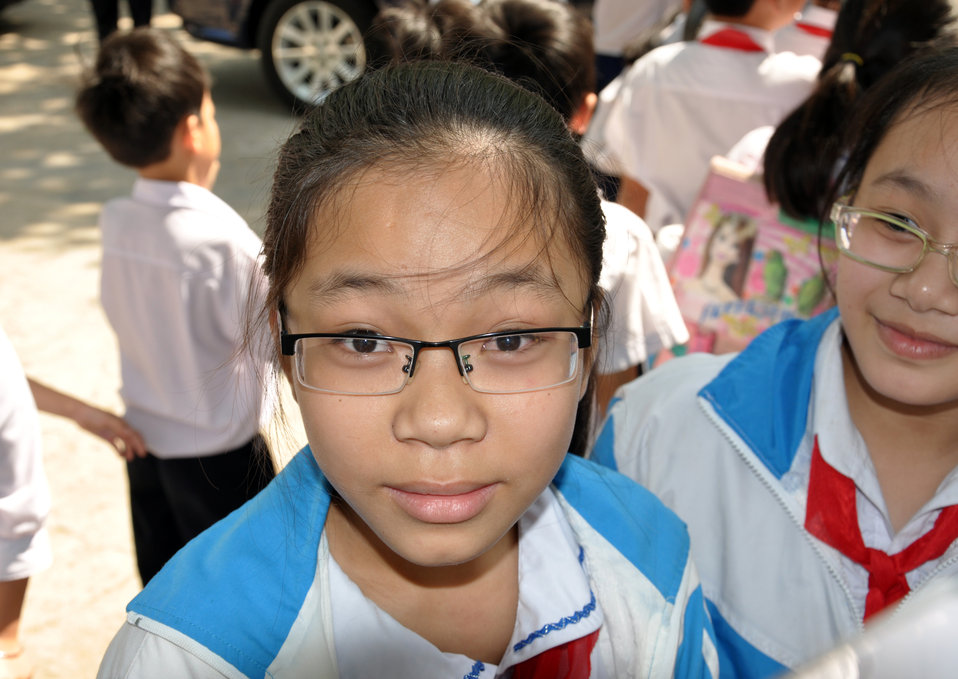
Eye screening at Phan Dinh Phung Primary School

USAID and HKI support refractive error screening examination for students at Phan Dinh Phung Primary School in Kon Tum.